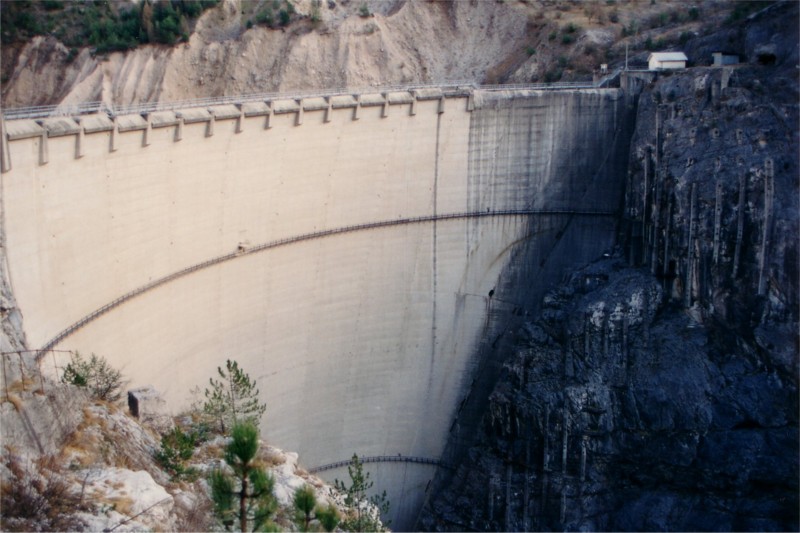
Italiano: AU: Ettore Dal Farra; fonte: foto proprio archivio; descrizione: Diga del Vajont; licenza: pubblico dominio